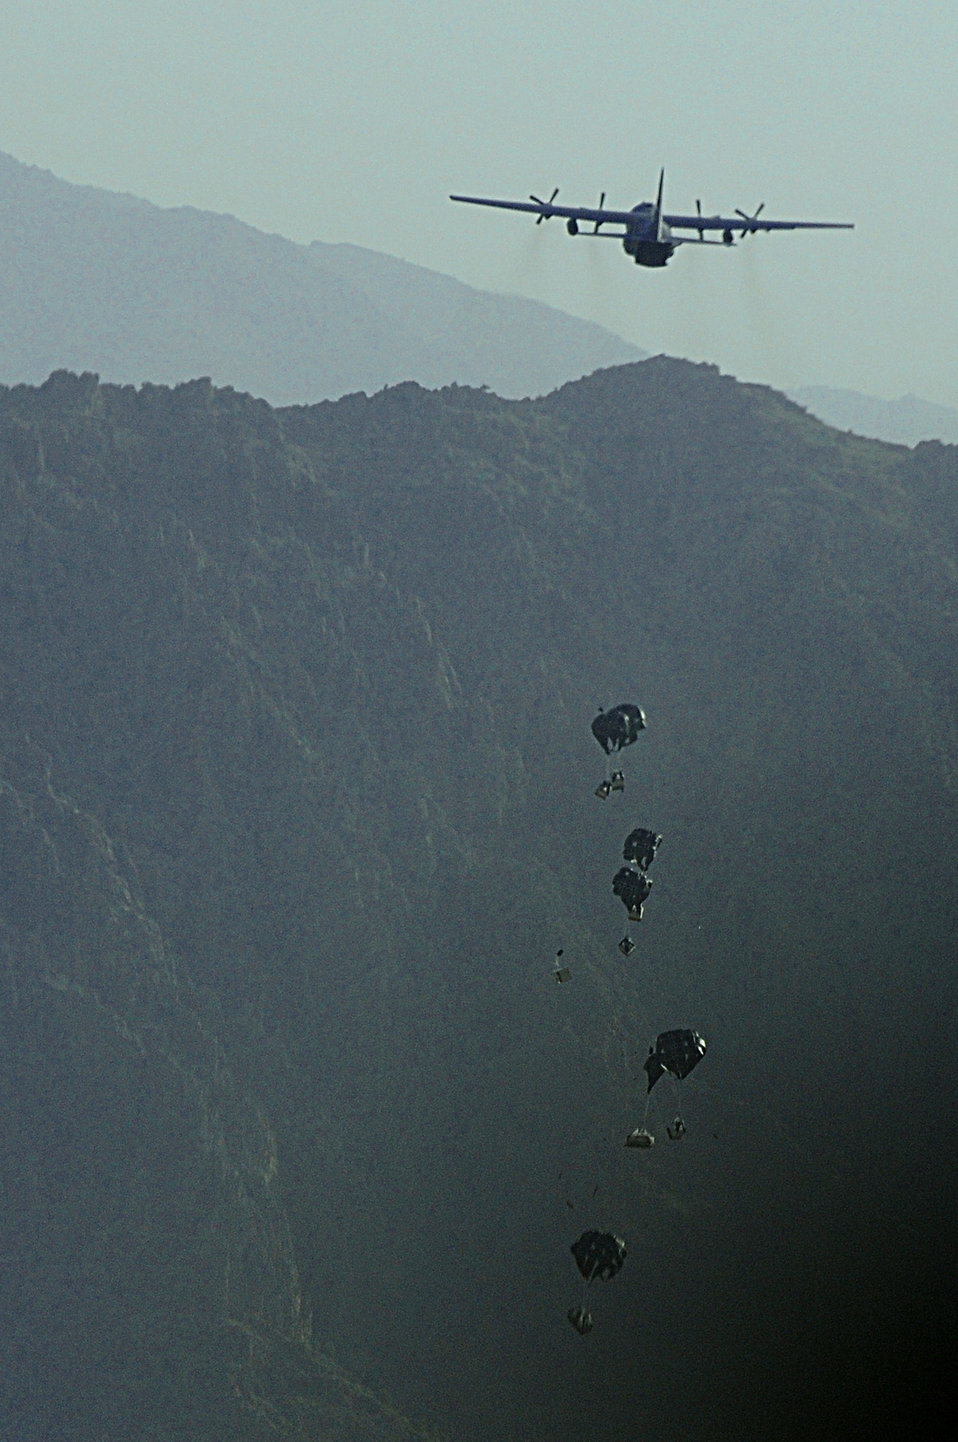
Mission over Afghanistan

A C-130 Hercules aircrew from the New York Air National Guard's 107th Airlift Wing airdrops supplies June 22, 2011, to a forward operating base in Oruzgan Province, Afghanistan.